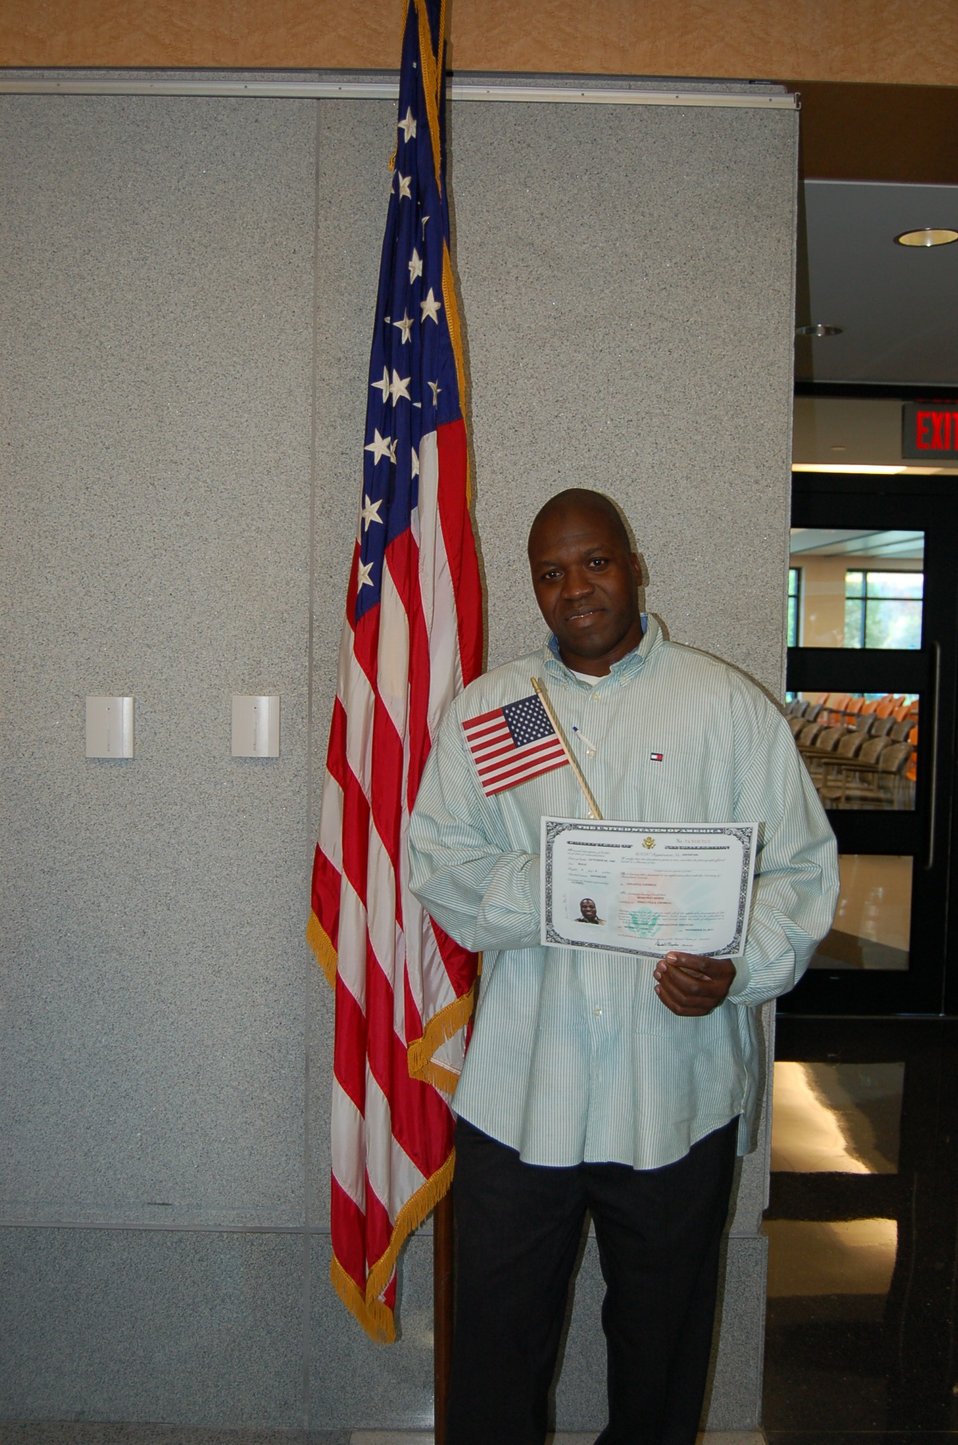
New Citizens